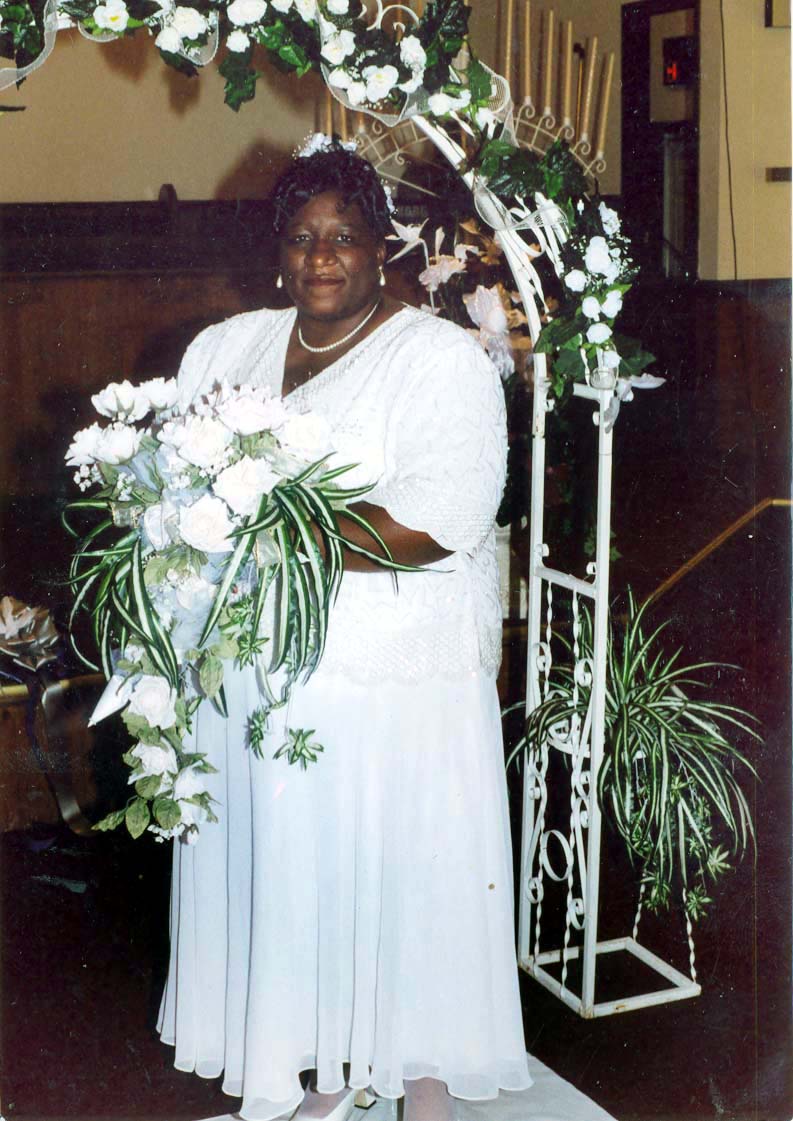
Robins employee sheds 150 pounds

BYRON, Ga. -- Irish Frederick once weighed 348 pounds and was told by her doctor to lose weight. She lost more than 150 pounds and dropped 12 dress sizes by changing her diet and exercising four to five days a week.